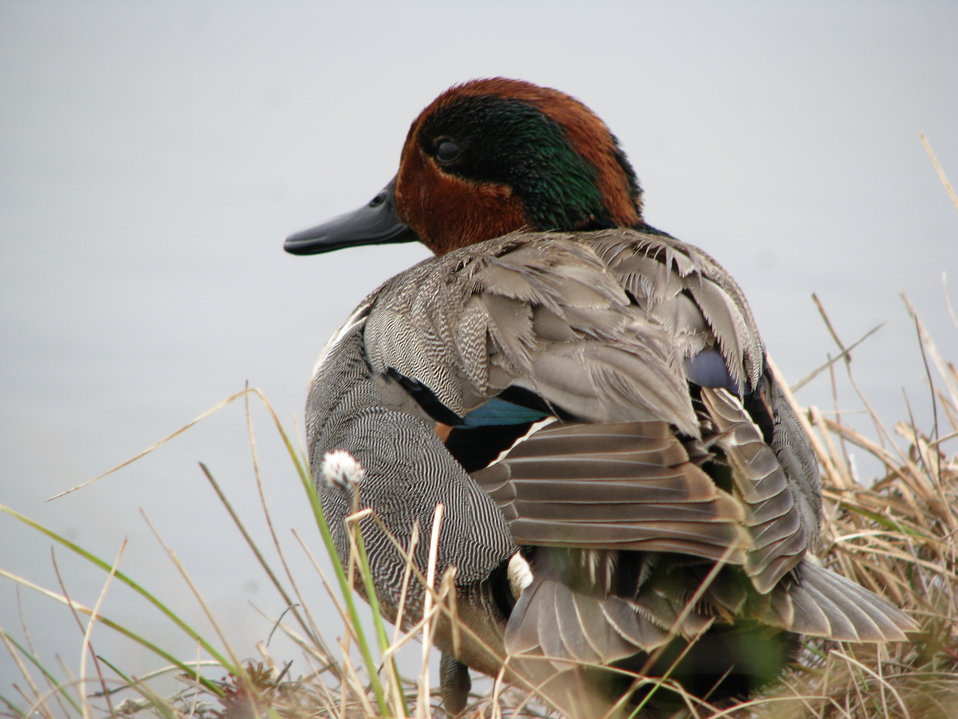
Male Green-winged teal

USFWS Yukon Delta NWR